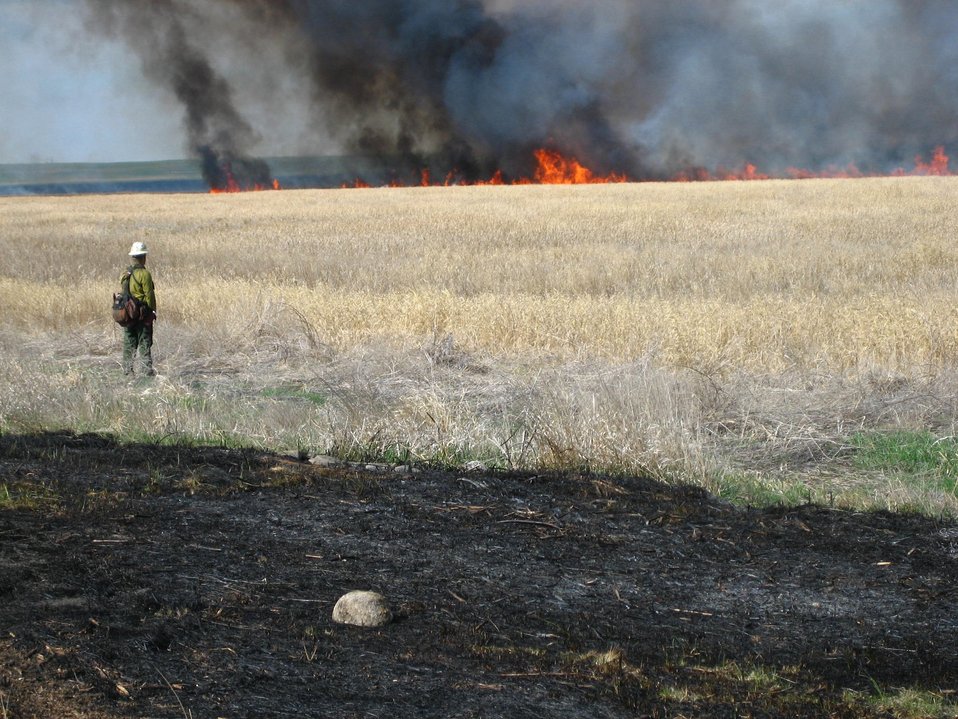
Prescribed Fire

Wildfires were a natural part of the prairie ecosystem. Native plants and animals are adapted to the periodic blazes that historically burned acres of grasslands. By mimicking those fires in a controlled manner, we are able to rejuvenate native species and hurt non-native invasive plant species. It is one of the tools we use to manage habitats.